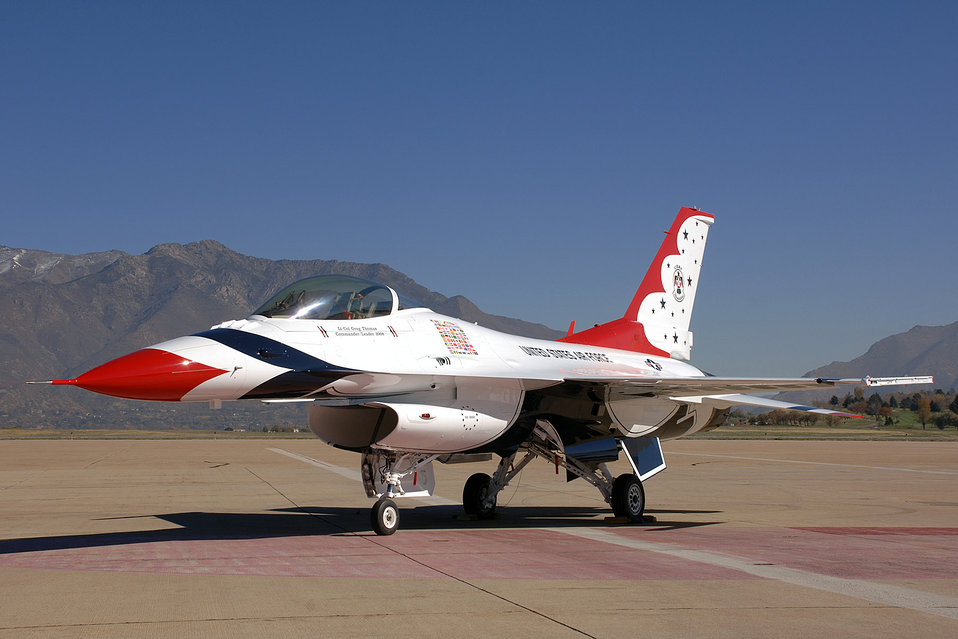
Thunderbirds receive first upgraded F-16

This is the first of new Block 52 F-16 Fighting Falcons that are being provided to the U. S. Air Force Thunderbirds aerial demonstration team. Officials at Hill Air Force Base, Utah, rolled out the upgraded fighter during a ceremony Oct. 24. The 11 aircraft destined for the Thunderbirds are scheduled to receive Falcon STAR modifications and a smoke generating system modification. The newly converted aircraft are slated for delivery for the 2009 show season.